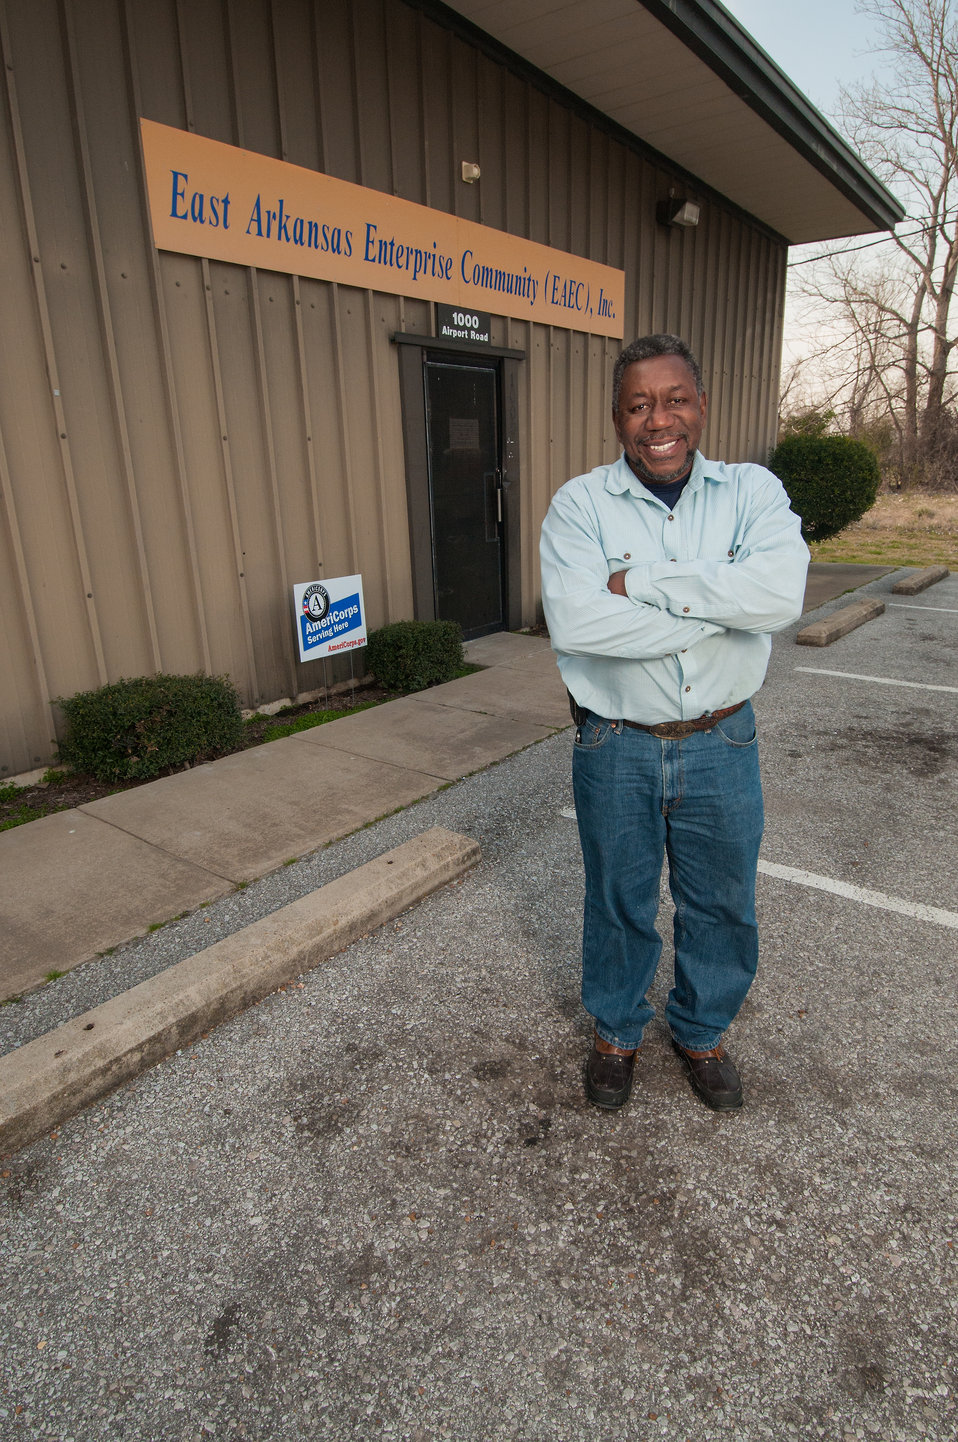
U.S. Department of Agriculture (USDA) Arkansas Strike Force Leader Charlie Williams stands in front of the East Arkansas Enterprise Community, (EAEC) Inc. in Forrest City, AR on Mar. 4, 2013. The EAEC is a beneficiary of the Seeds of Change Implementation Plan organized by USDA in partnership with Heifer International (an International organization whose mission is to work with communities to end hunger and poverty and care for the Earth) and various for-profit and non-profit organizations. The scope of the plan is to use sustainable agriculture to build food systems in the Arkansas Delta. The program has evolved into the Arkansas Delta Seeds of Change (ADSOC). The EAEC is one of 42 community-based organizations located in high poverty areas in the U.S. to benefit from the ADSOC Initiative.